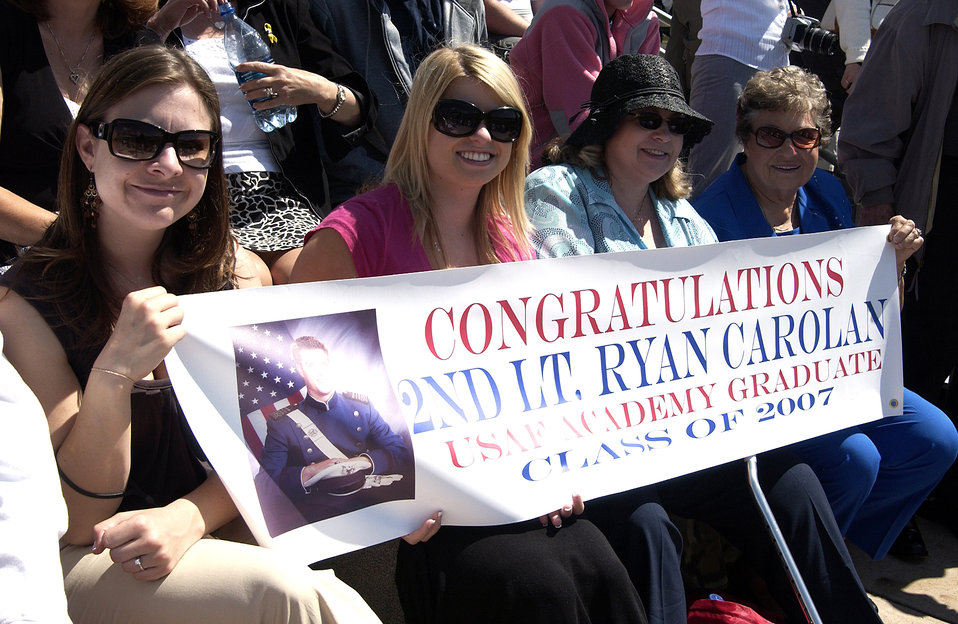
Parade preps Class of 2007 for graduation

Family members of graduating cadet Ryan Carolan display a banner during the 2007 Graduation Parade May 29 at the U.S. Air Force Academy in Colorado. The graduation for the U.S. Air Force Academy's Class of 2007 will be held at 10 a.m. May 30 at Falcon Stadium. Secretary of Defense Dr. Robert M. Gates will be the guest speaker. Cadets are exposed to a balanced curriculum that provides a general and professional foundation essential to a career Air Force officer.